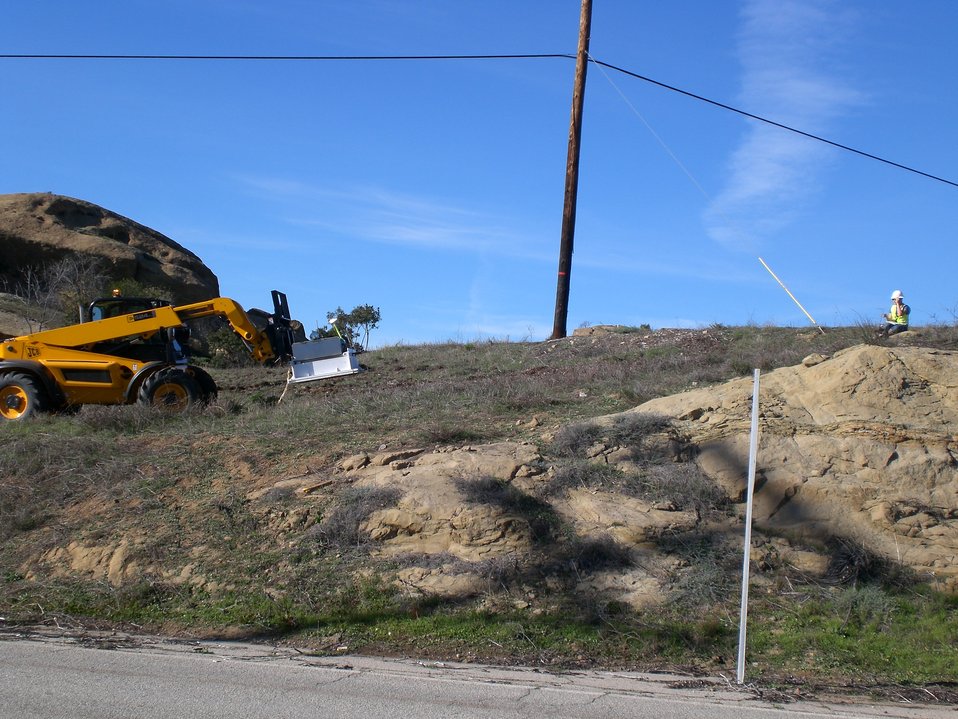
Recovery Act-Funded Study Assesses Contamination at Former Test Site in California

Workers conduct Gamma Scanning.

Under an interagency agreement with DOE, the Environmental Protection Agency (EPA) is conducting
a study at Santa Susana Field Laboratory (SSFL) Area IV and the Northern Undeveloped Land. DOE’s Energy Technology Engineering Center (ETEC) is located in Area IV. Results of the study will guide cleanup decisions for this portion of SSFL, which was once used for a broad range of energy related research and development.